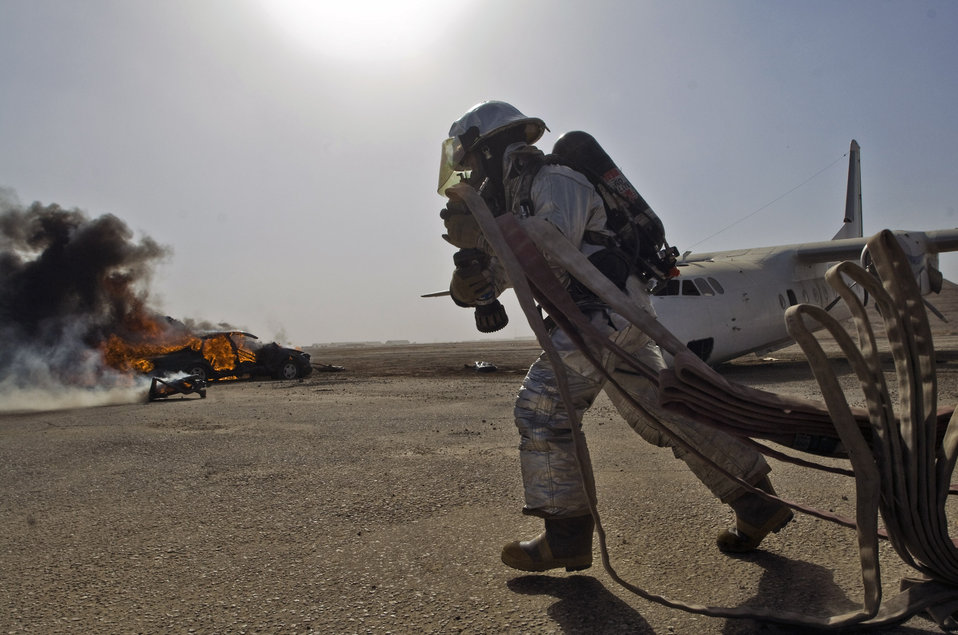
Testing under fire

Senior Airman Bradley Richgels pulls out a fire hose in response to a vehicle fire Dec. 17 at Ali Base, Iraq. Airman Richgels and other firefighters with the 407th Expeditionary Civil Engineer Squadron held a training exercise to test how Airmen response to a vehicle fire. He is deployed from the Minnesota Air National Guard's 133rd Airlift Wing.